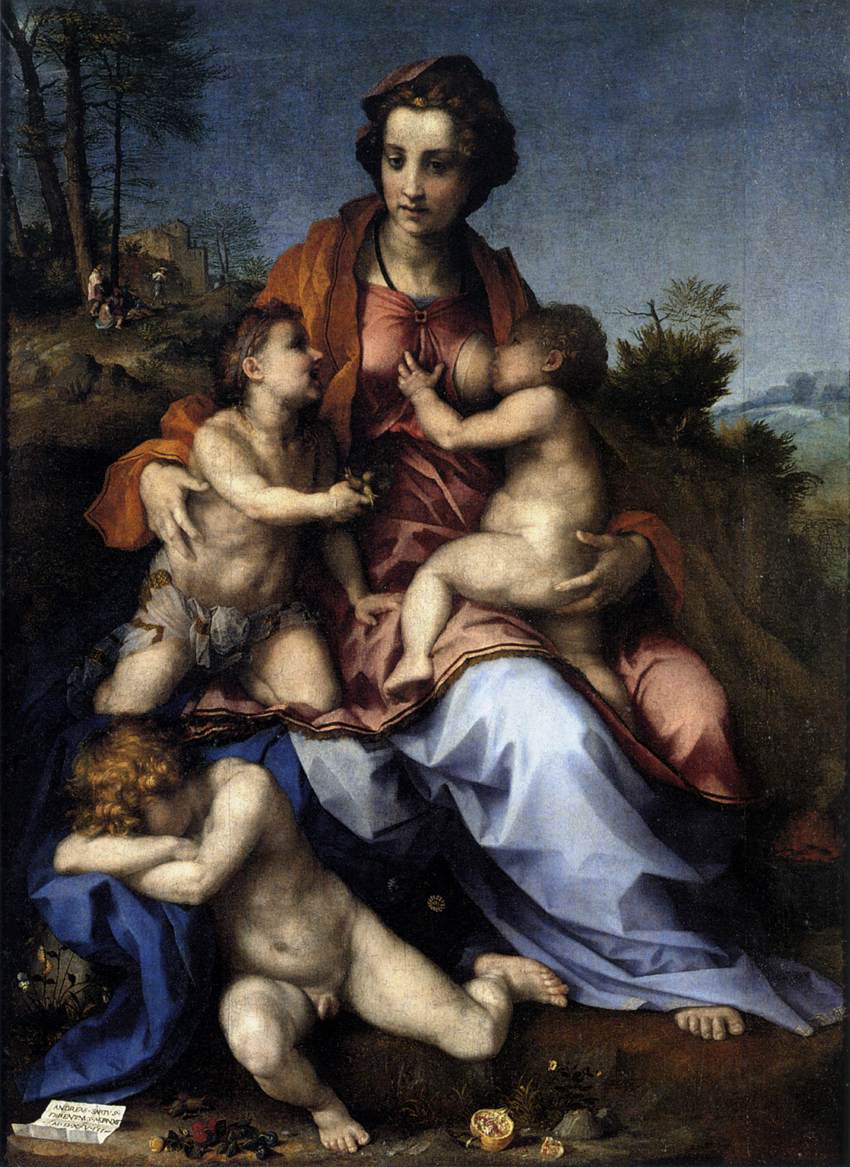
Andrea del Sarto - Charity - WGA00368